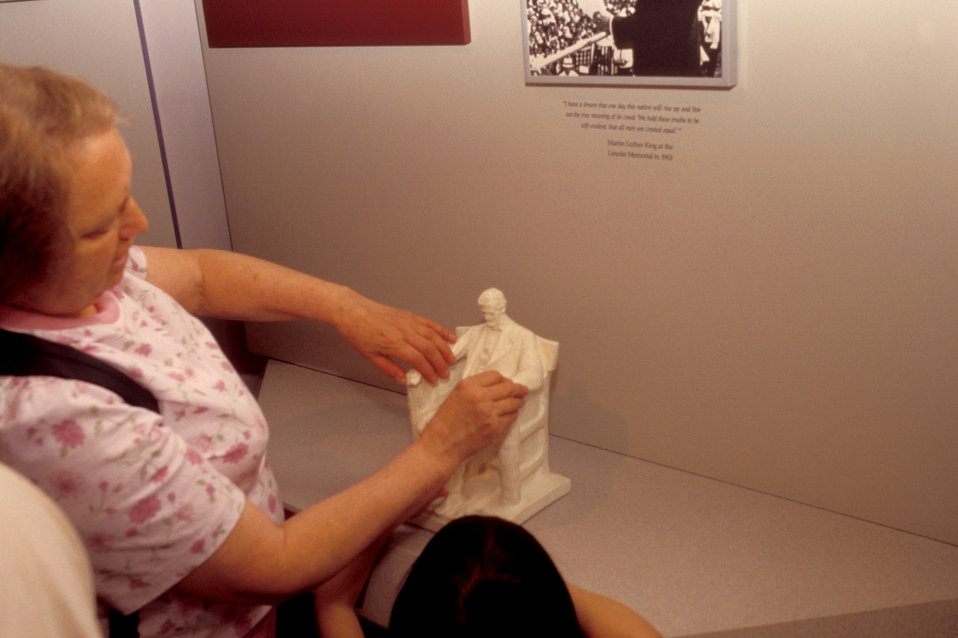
This was the second in a series of eight images (PHIL# 9088 - 9095) revealing the exhibits inside the U.S. National Building Museum, all of which could be touched by all visitors, including adults, children, and especially those who were mobility, or visually impaired. Consideration paid to those with such impairments during the designing of such a facility, enhanced the enjoyment experienced from all participants, as well as their overall learning experience. The exhibits were equipped with Braille descriptions, large print signs, and were mounted so that standing or seated users could both fully appreciate their experience. In this particular image, a woman and child were touching a replica of the Lincoln Memorial. 'The Center for Universal Design (CUD) is a national research, information, and technical assistance center that evaluates, develops, and promotes accessible and universal design in housing, buildings, outdoor and urban settings and related products.'